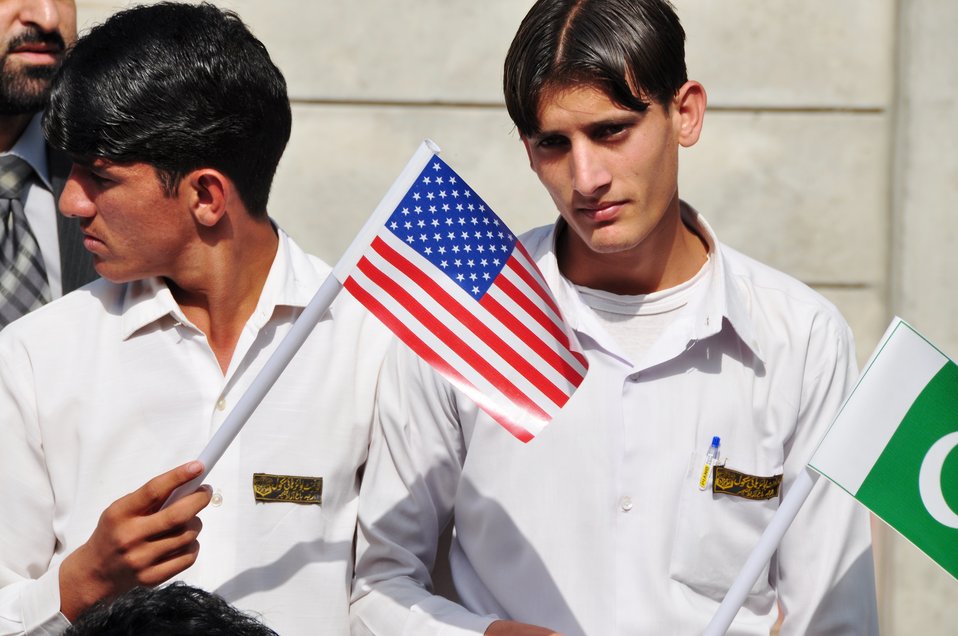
Bagh 04